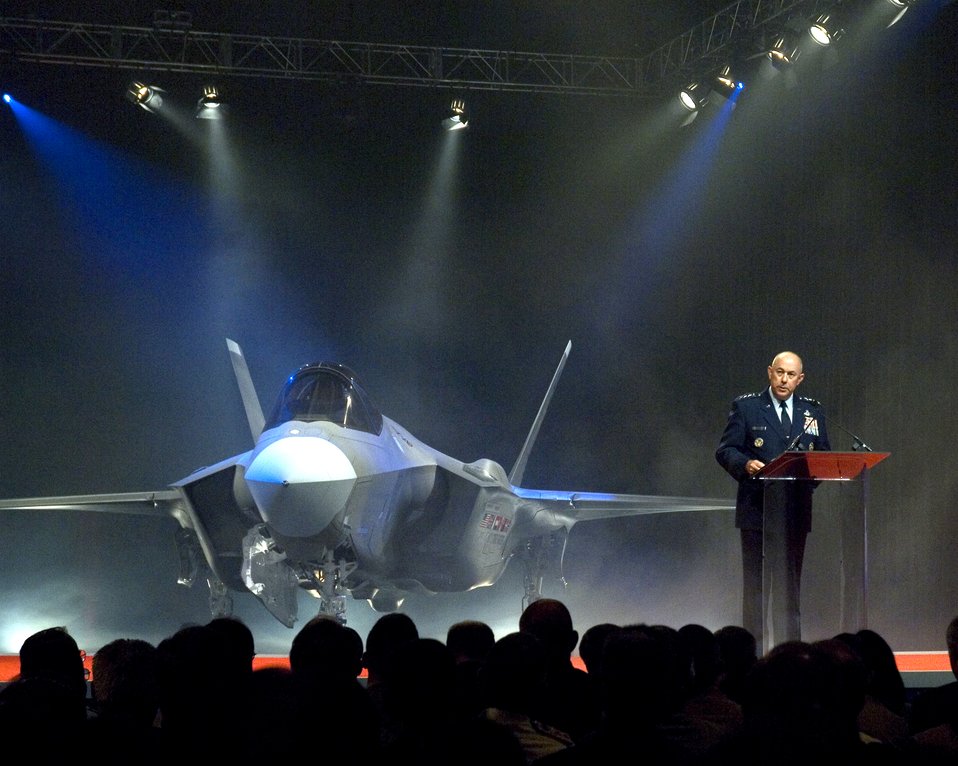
Lightning II makes its debut

Air Force Chief of Staff Gen. T. Michael Moseley announces the name selected for the new Lockheed Martin F-35 during the inauguration ceremony at the Lockheed Martin plant in Fort Worth, Texas, on July 7. The jet, named the Lightning II, is a 5th-generation, supersonic stealth fighter designed to replace a wide range of existing aircraft, including the AV-8B Harrier, A-10 Thunderbolt II, F-16 Fighting Falcon, F/A-18 Hornet and Royal Air Force Harrier GR-7 and Sea Harriers.